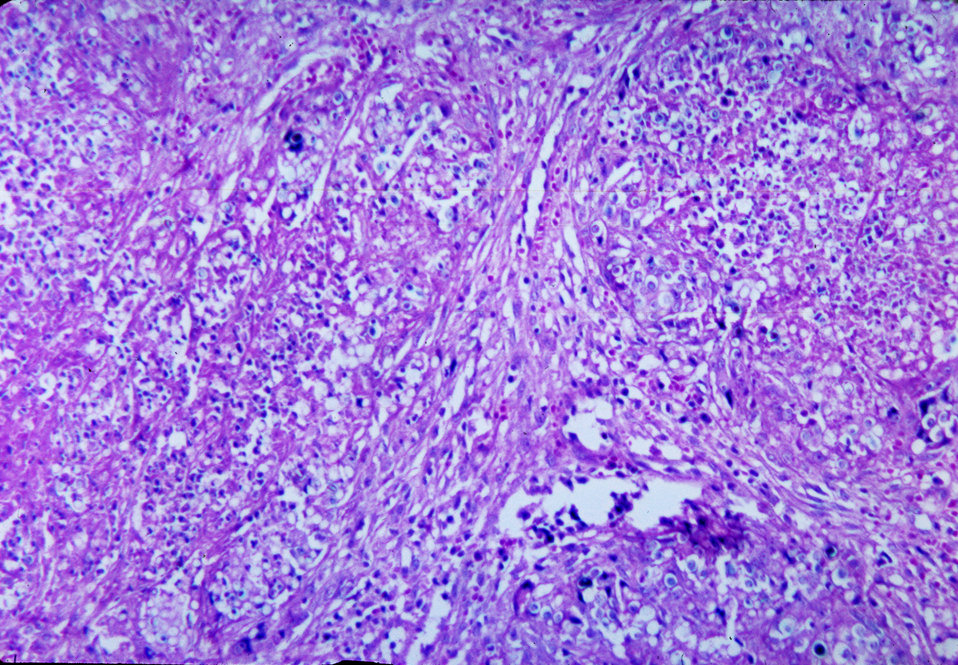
This micrograph depicts the histopathologic changes of the spleen due to Histoplasma duboisii.